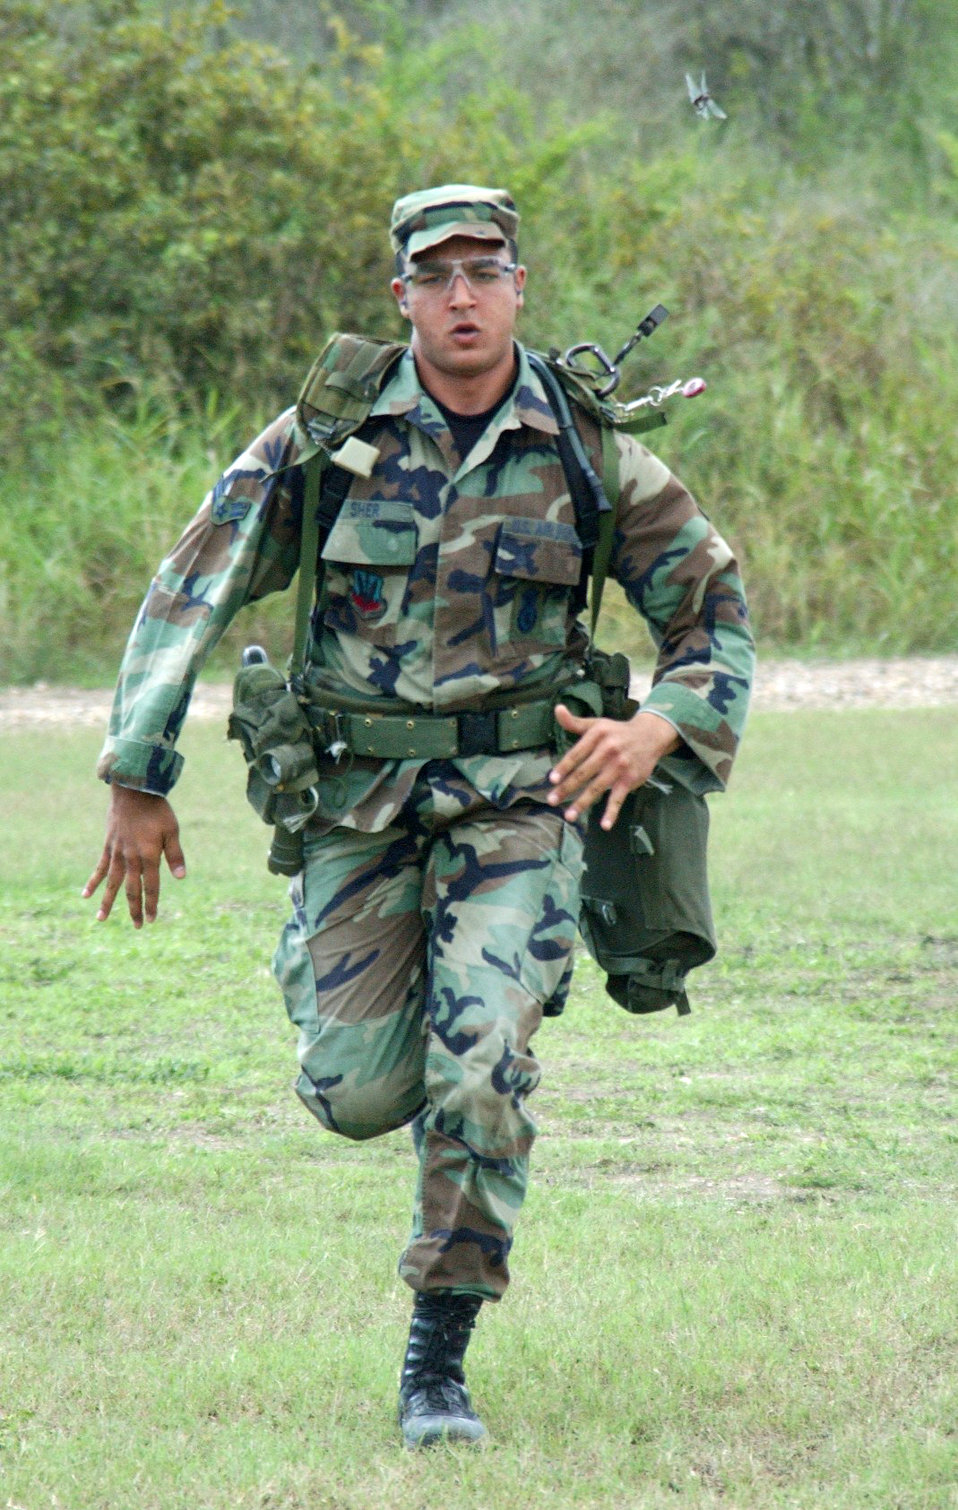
Defender Challenge

LACKLAND AIR FORCE BASE, Texas (AFPN) -- Airman 1st Class Sarosh Sher sprints to the aid of a simulated downed Airman during the handgun and shotgun event at Defender Challenge 2004. Airman Sher, from the 99th Security Support Squadron at Nellis Air Force Base, Nev., is on the Air Combat Command team. The annual Defender Challenge here pits security forces teams from Air Force major commands, the Royal Air Force Regiment and the Department of Energy against each other in events that test marksmanship, tactics, physical fitness and teamwork. This year's competition runs Oct. 23 to 28.